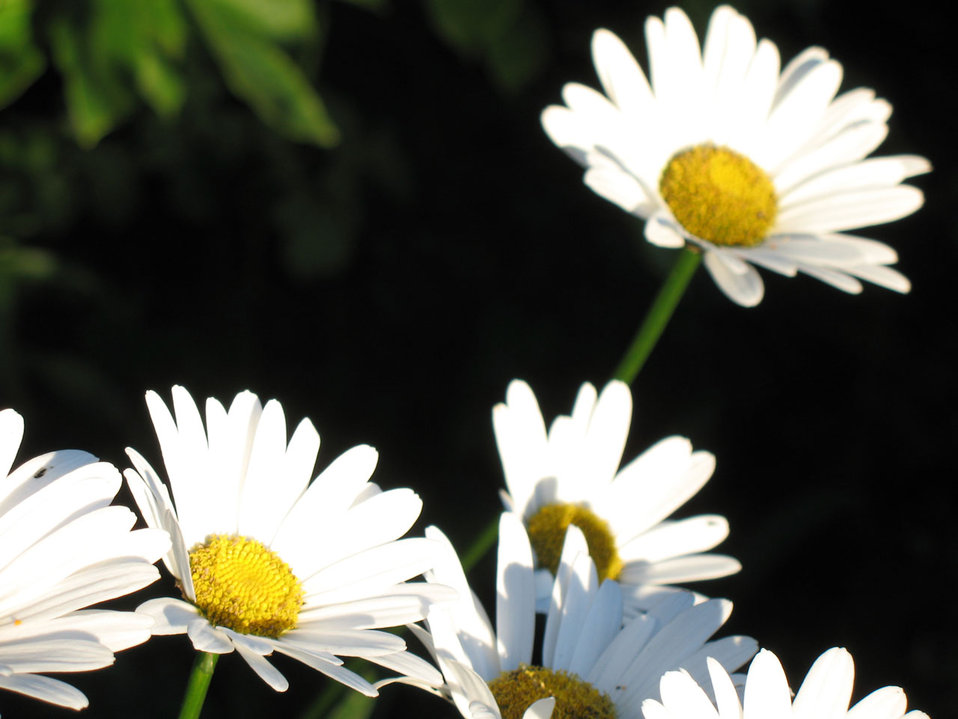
Daisy flowers

A couple of daisy flowers.